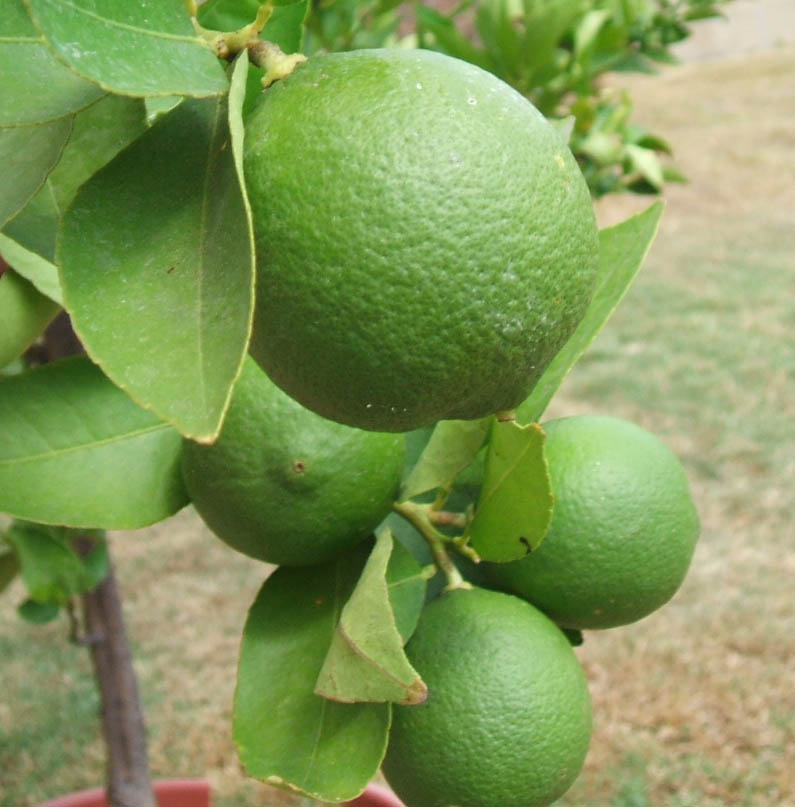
Unripened key limes growing in a backyard. Taken by me in my backyard on Sept. 15, 2006.